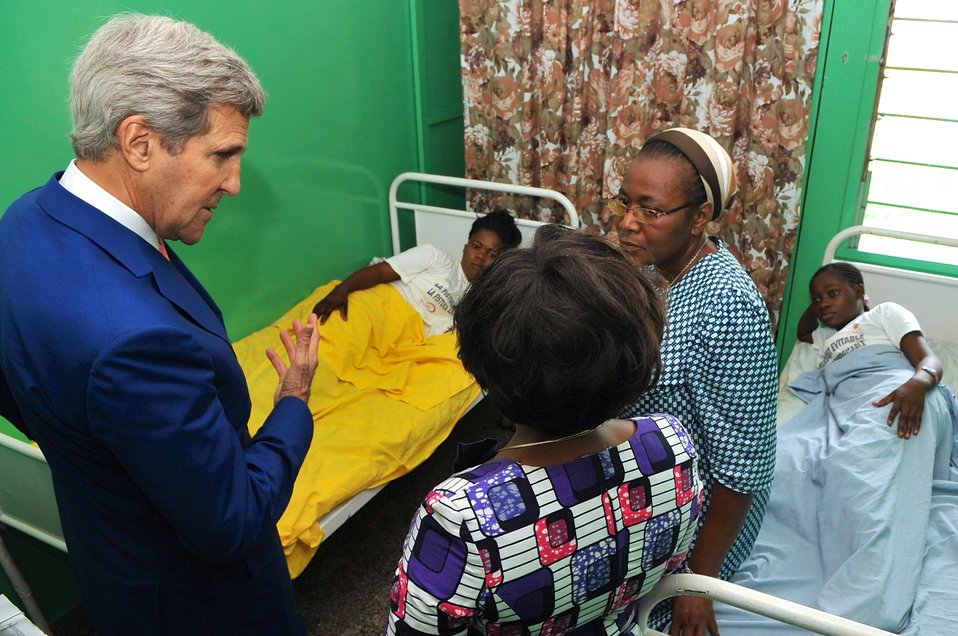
Secretary Kerry Meets With Two Women Helped By USAID-Funded Fistula Clinic in Kinshasa

U.S. Secretary of State John Kerry speaks to two women who were treated at St. Joseph's Hospital and its USAID-funded Fistula Clinic during a visit to the facility in Kinshasa, Democratic Republic of Congo, on May 4, 2014.